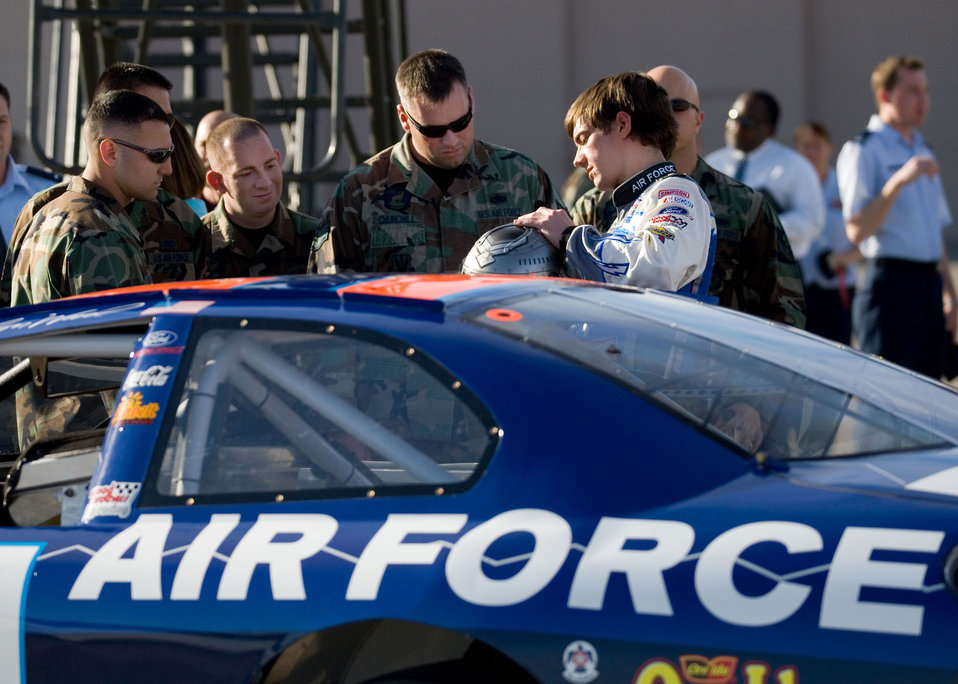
Air Force Racing

Jon Wood, driver of the Air Force car, shows his racing helmet to crew chiefs from the 57th Wing, Nellis Air Force Base, Nev., March 8. Wood is at Nellis visiting Airmen before his NASCAR Nextel Cup UAW Daimler-Chrysler 400 race March 10.